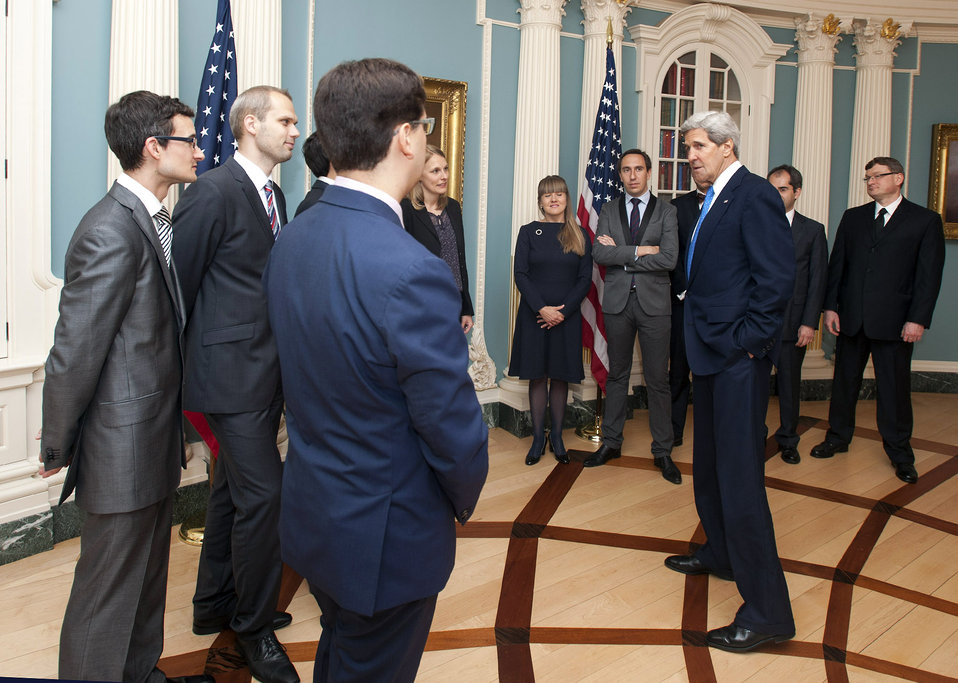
Secretary Kerry Speaks With the Transatlantic Diplomatic Fellows

U.S. Secretary of State John Kerry chats with the Transatlantic Diplomatic Fellows at the U.S. Department of State in Washington, D.C., on April 29, 2014.